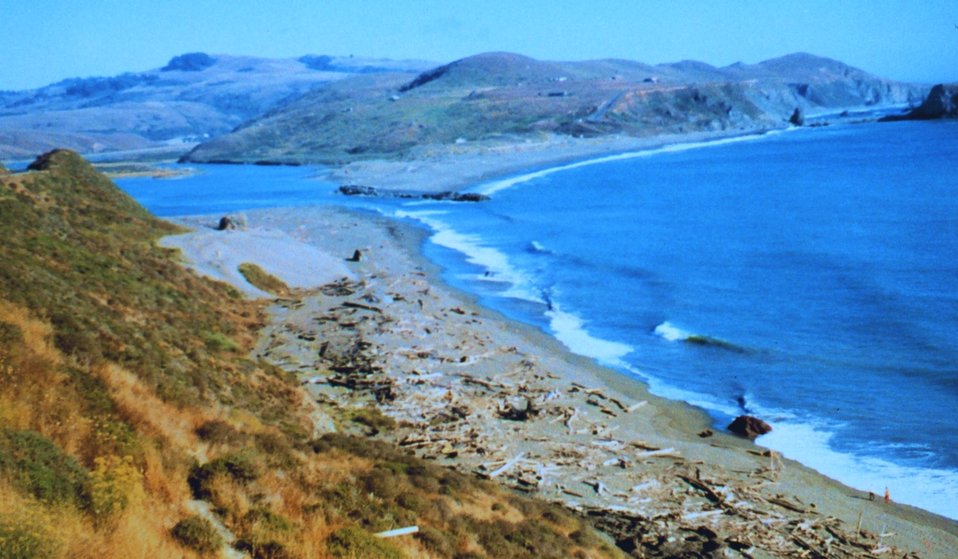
The mouth of the Russian River north of San Francisco.